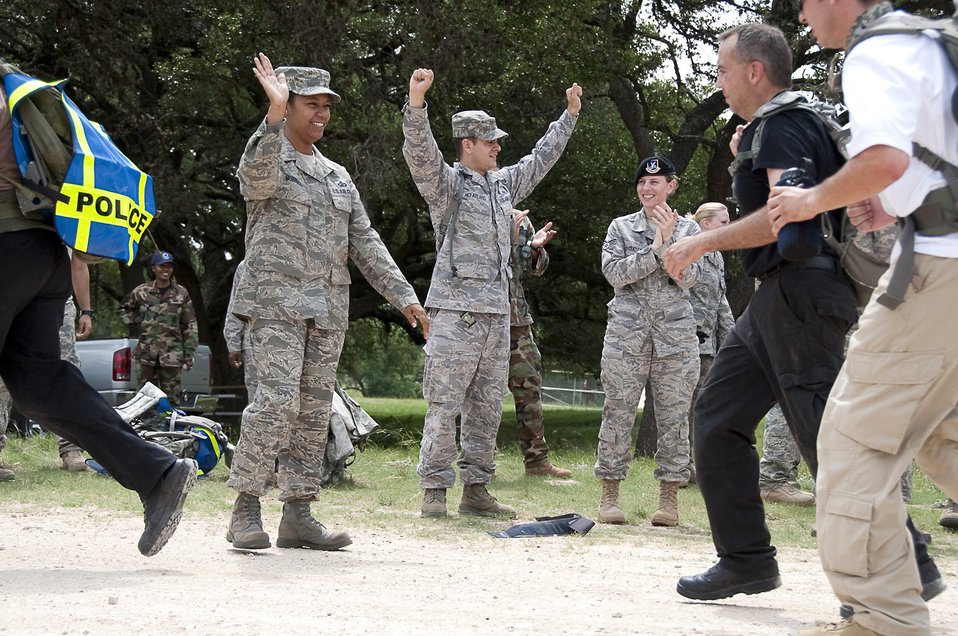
National Police Week 2010

Master Sgt. Cherrie Burrell (left), Staff Sgt. Samson MacFarland and Senior Airman Elizabeth Baratta cheer as members of the Live Oak Police Department cross the finish line of the obstacle course and ruck march event May 12, 2010, at Camp Bullis, Texas. Sergeants Burrell and MacFarland are with the 902nd Security Forces Squadron at nearby Randolph Air Force Base and Airman Baratta is with the 802nd SFS at Lackland AFB.